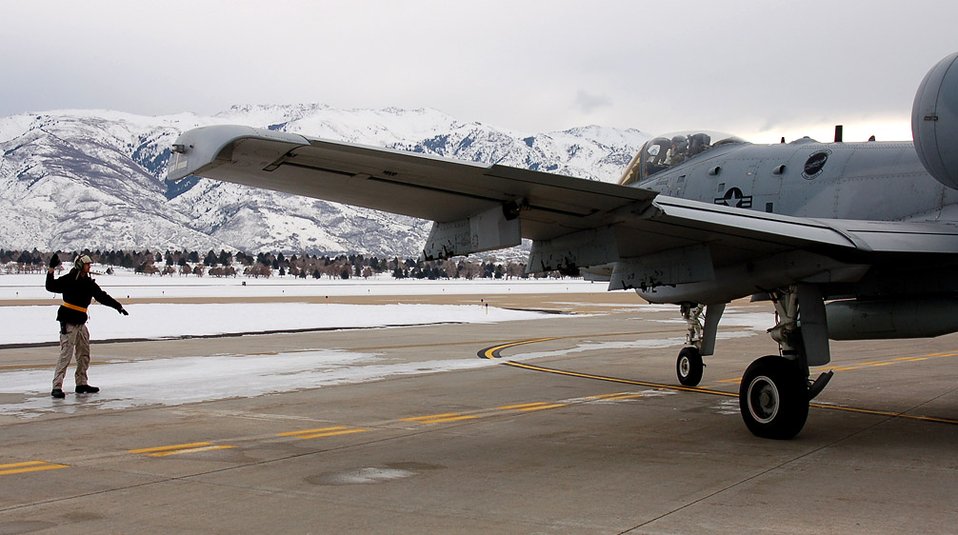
Maintenance unit completes upgrade of 100th A-10

Andrew Selph guides Capt. Jesse McCulloch as he taxis aircraft 80-0172 onto the runway at Hill Air Force Base, Utah. Captain McCulloch flew the 100th upgraded A-10 Thunderbolt II to Moody AFB, Ga. The avionics and weapons system upgrades will now extend its service life until 2028. Mr. Selph is a crew chief with the 571st Aircraft Maintenance Squadron.